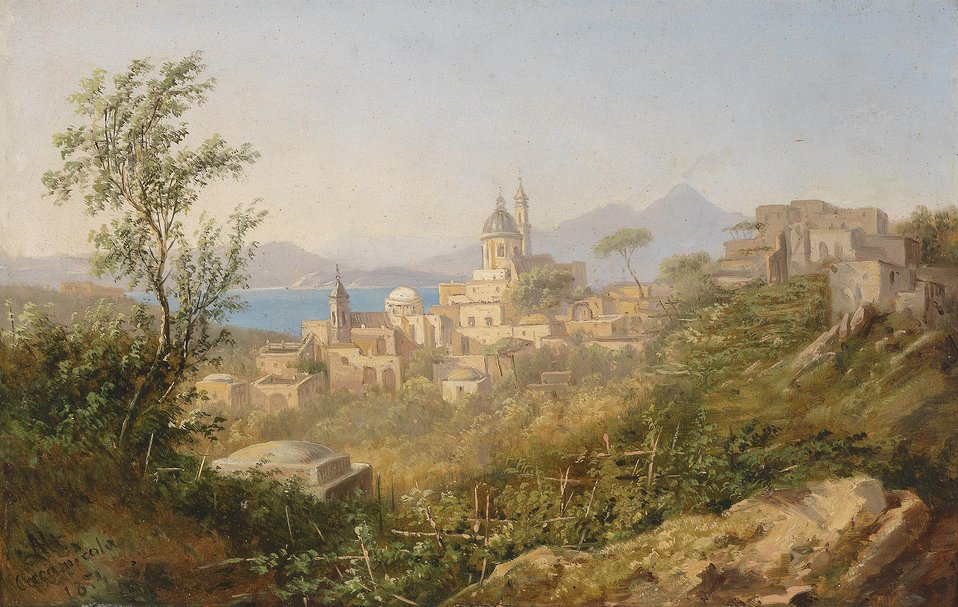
Deutsch: Blick auf Casamicciola. Signiert Alt, Casamiccola, 74, Öl auf Karton, 24 x 36,5 cm